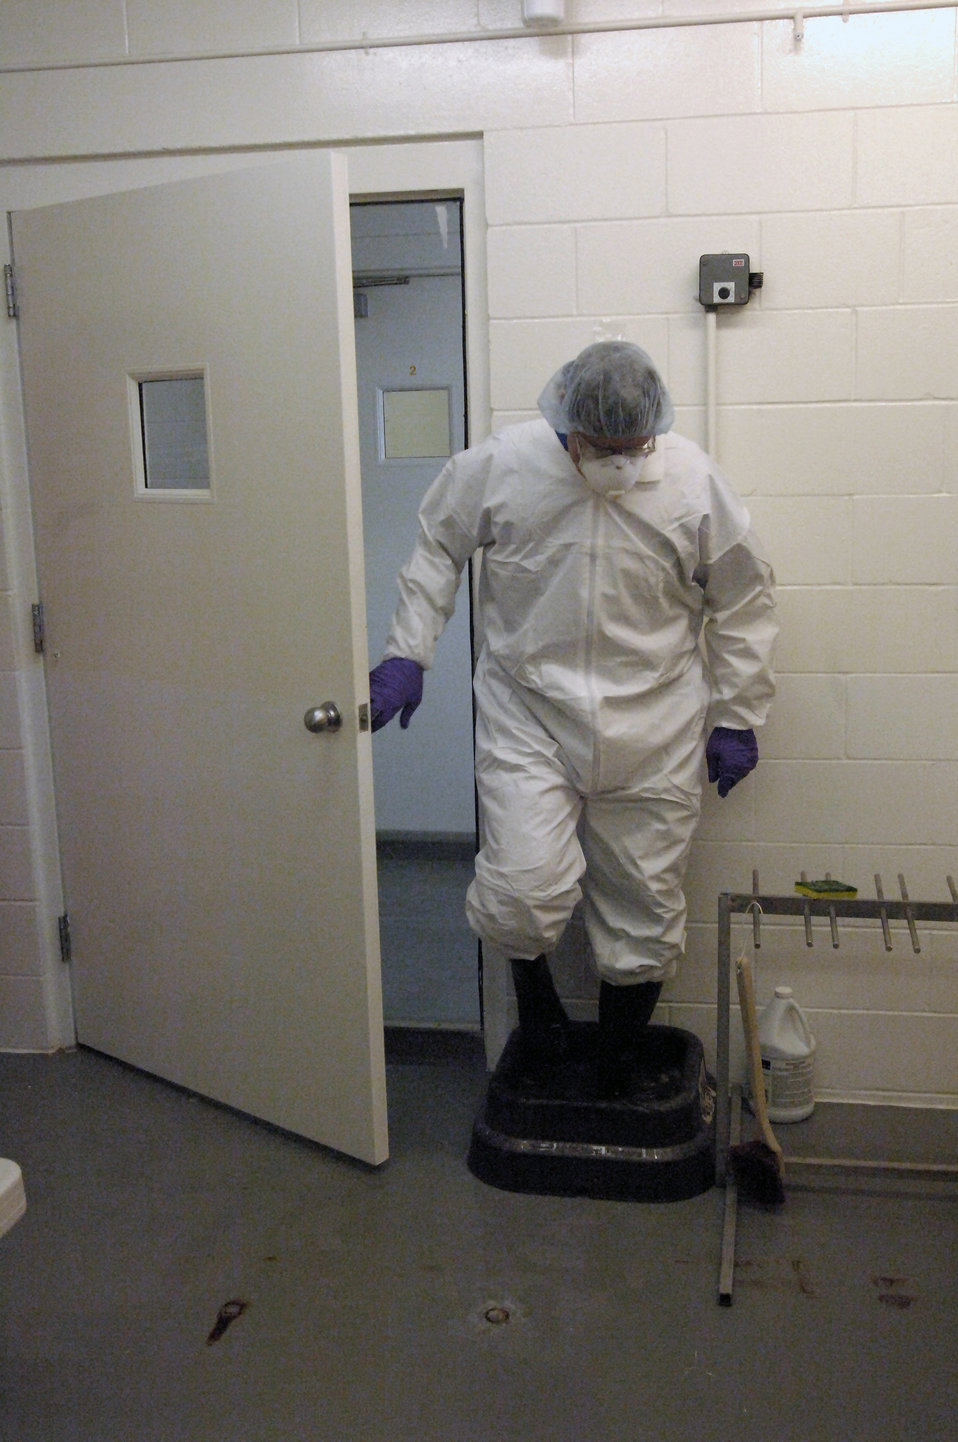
U.S. Department of Agriculture (USDA) Animal and Plant Health Inspection Service (APHIS) APHIS’s National Veterinary Services Laboratory in Ames, Iowa is a World Organization for Animal Health (OIE) reference laboratory for numerous diseases, including Avian Influenza. These photos show APHIS laboratory technicians performing diagnostic testing and preparing to enter an animal room. They are following prescribed biosafety procedures by wearing the appropriate personal protective equipment.